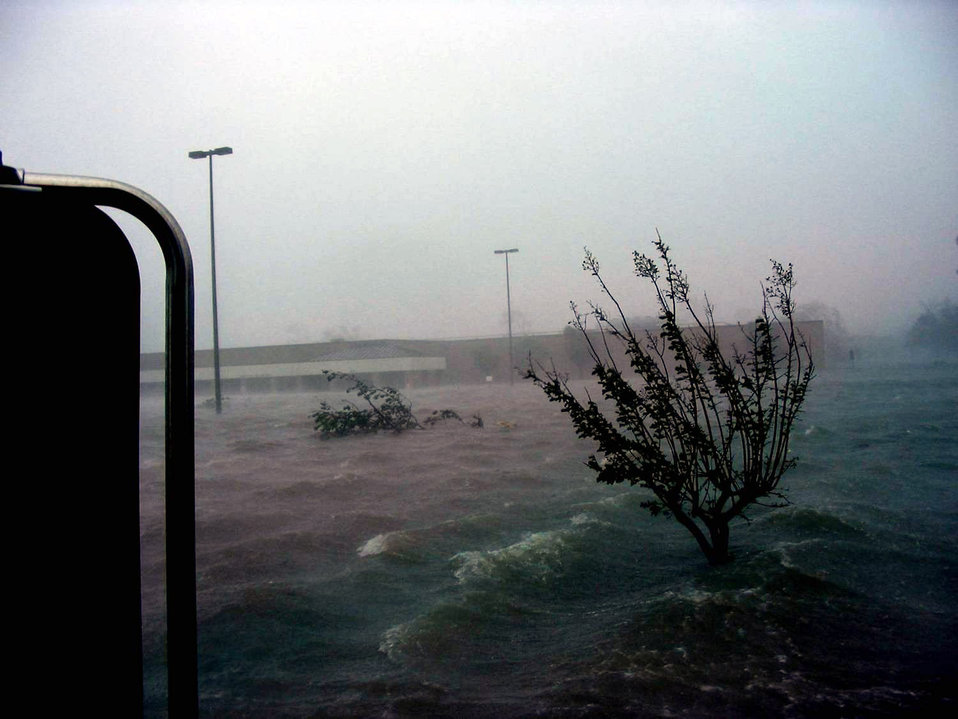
People venture outside Keesler shelters

KEESLER AIR FORCE BASE, Miss. -- The storm surge from Hurricane Katrina flooded the commissary here. Water 5-feet deep inundated the facility. The base and the 6,000 sheltered military students, permanent party, civilians and their families survived the Category 4 hurricane with no casualties. The initial damage was catastrophic to base infrastructure. The base is currently in the assessment and recovery stage.